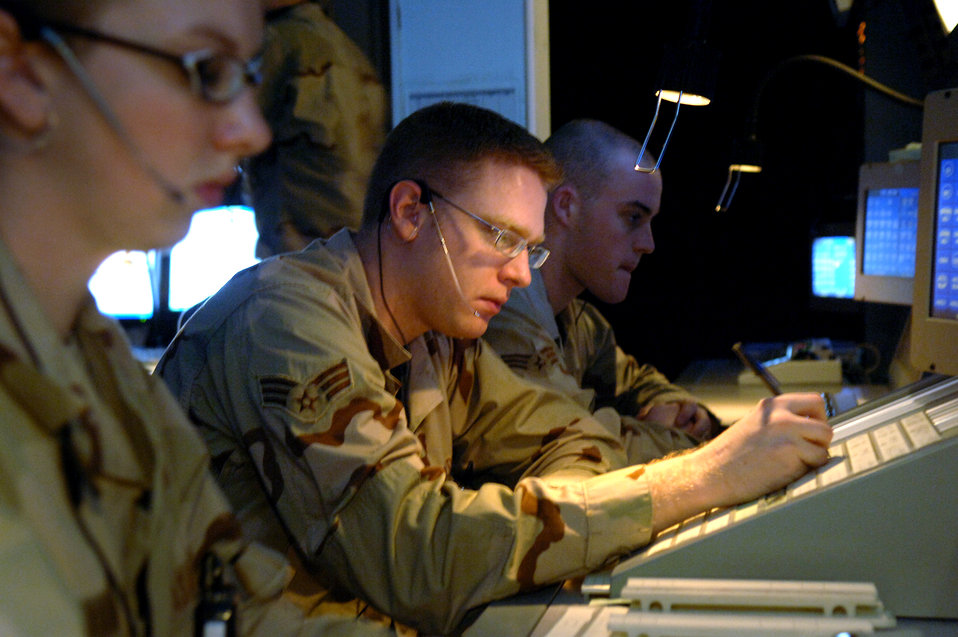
Operation Iraqi Freedom

BALAD AIR BASE, Iraq - Senior Airmen Lacey Omara, Phillip Meseke, and Frank Gilman, 332nd Expeditionary Operations Support Squadron, air traffic controllers, work at the Combined Enroute Radar Approach Control (CERAP) facility here. Airman Omara is working the Balad Center Scope position and Airman Meseke is performing the assist duties for the Scope position. Vital to the air traffic control team at Balad are the 38 air traffic controllers at the CERAP who work about 75,000 miles of Iraqi airspace.